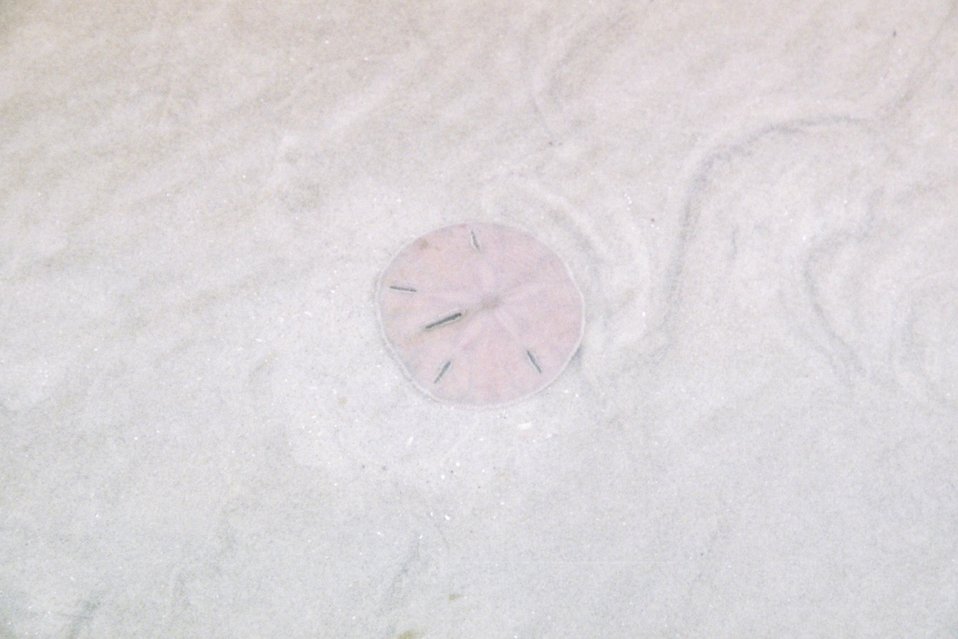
A live sand dollar in shallow waters